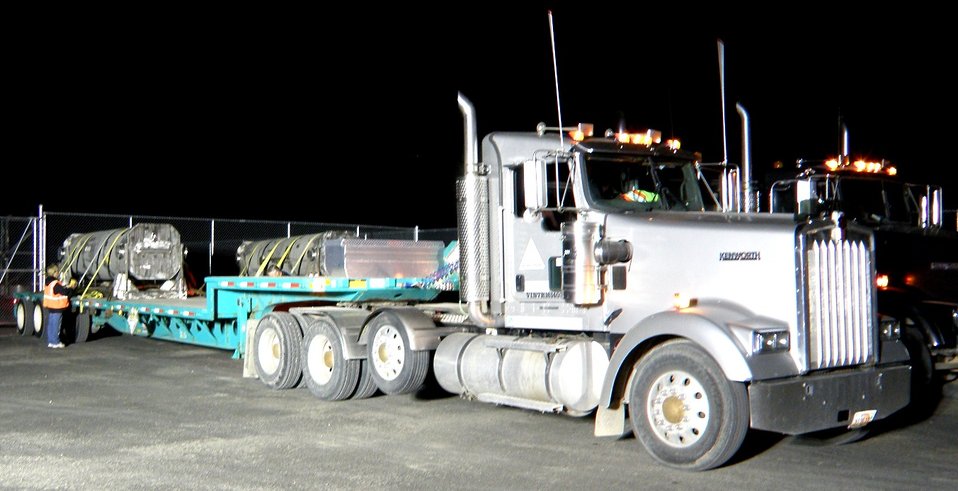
Idaho Recovery Act Workers Complete Last of Nine Transuranic Waste Transfers

Workers prepare a container with transuranic waste for shipment to the Idaho Nuclear Technology and Engineering Center.

American Recovery and Reinvestment Act workers successfully transferred 21 containers of transuranic waste — each weighing up to 15 tons — to a facility for repackaging and shipment to a permanent disposal location.
With the help of nearly $90 million from the Recovery Act, the workers recently completed the ninth and final shipment of the containers from the Materials and Fuels Complex to the Idaho Nuclear Technology and Engineering Center (INTEC).